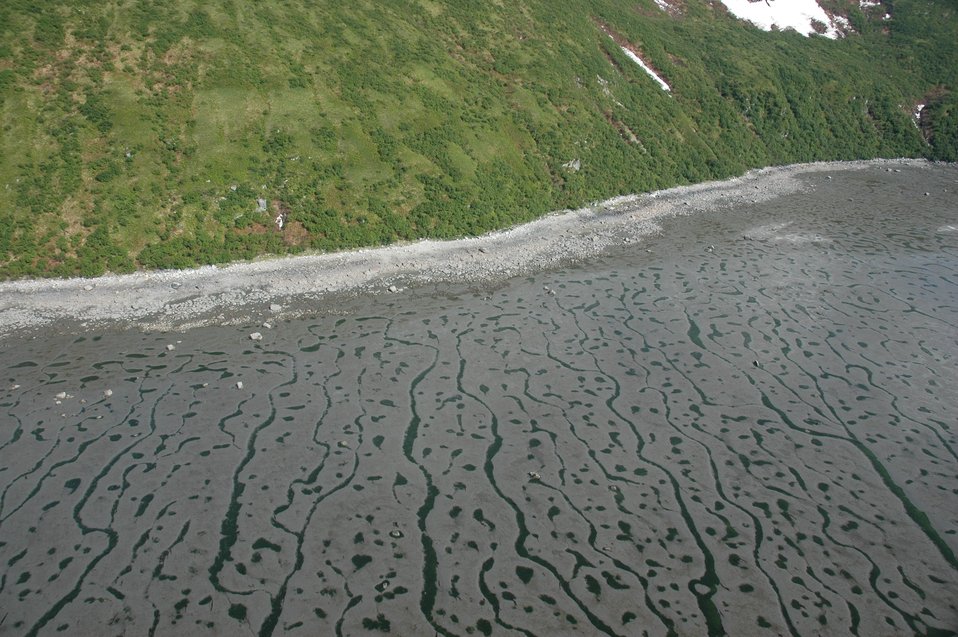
Aerial photograph. A low tide landscape of tidal channels nearly orthogonal to shoreline with randomly spaced circular and elliptical potholes. A few of the potholes have boulders in them.